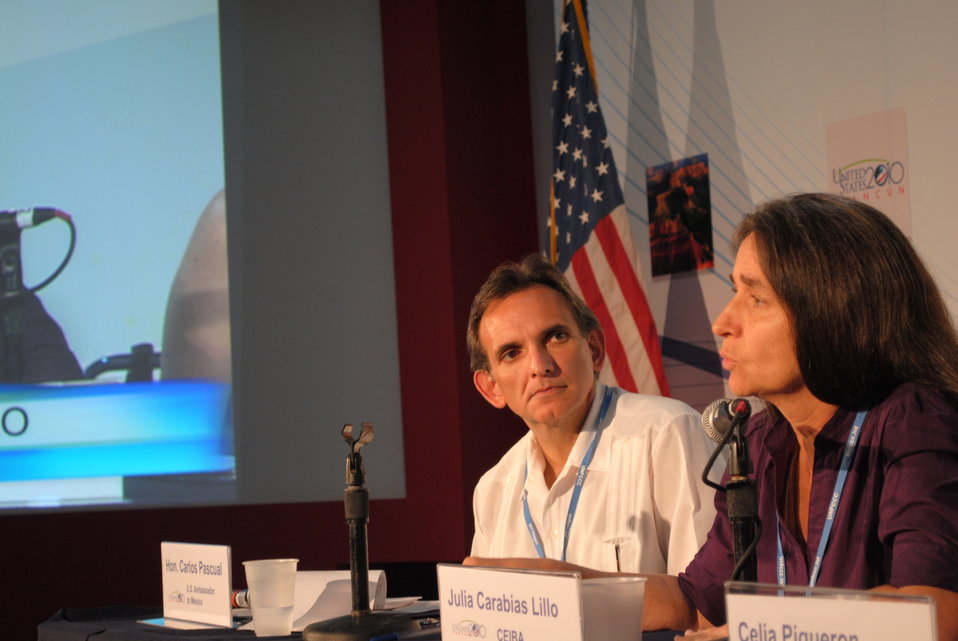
Ambassador Pascual Listens to CEIBA's Julia Carabias Lillo

U.S. Ambassador to Mexico Carlos Pascual listens to CEIBA's Julia Carabias Lillo during the U.S. and Mexico Bi-National Cooperation on Climate Change and Development panel at the U.S. Center at COP-16 in Cancun, Mexico, on December 8, 2010.